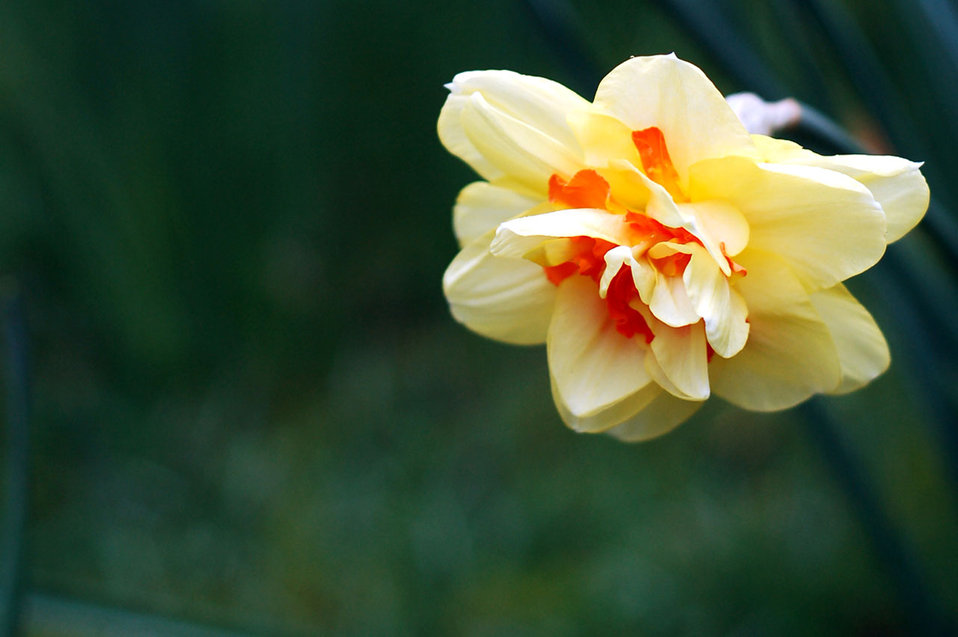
Daffodil

Unusual daffodil variety, dark green background.